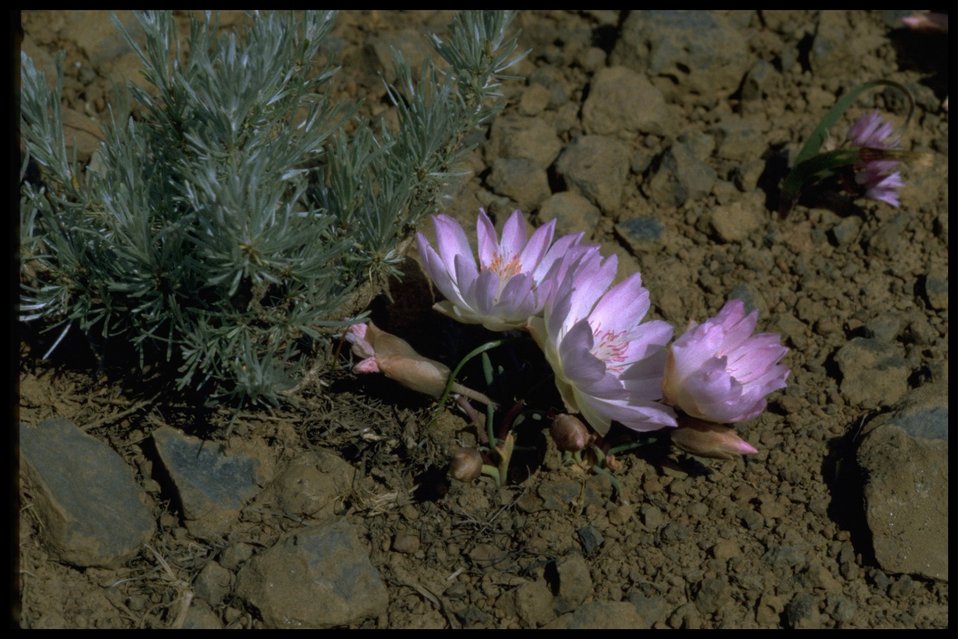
Medium Shot of Bitterroot wildflowers and stiff sagebrush.